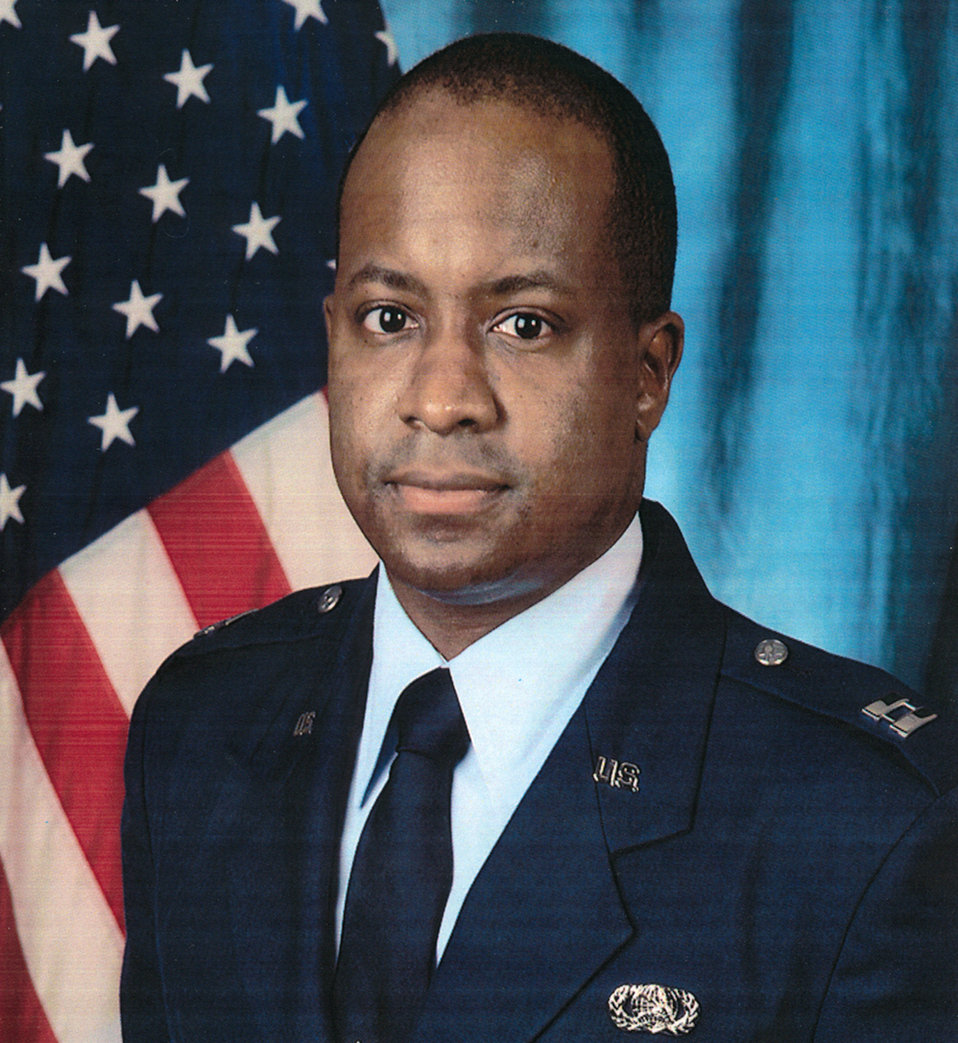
Group members dedicate camp to fallen hero

Capt. Charles A. Ransom died from wounds received from enemy gunfire April 27, 2011, at the Kabul International Airport in Afghanistan, while supporting Operation Enduring Freedom. He was deployed to Afghanistan from the 83rd Network Operations Squadron at Lackland Air Force Base, Texas.